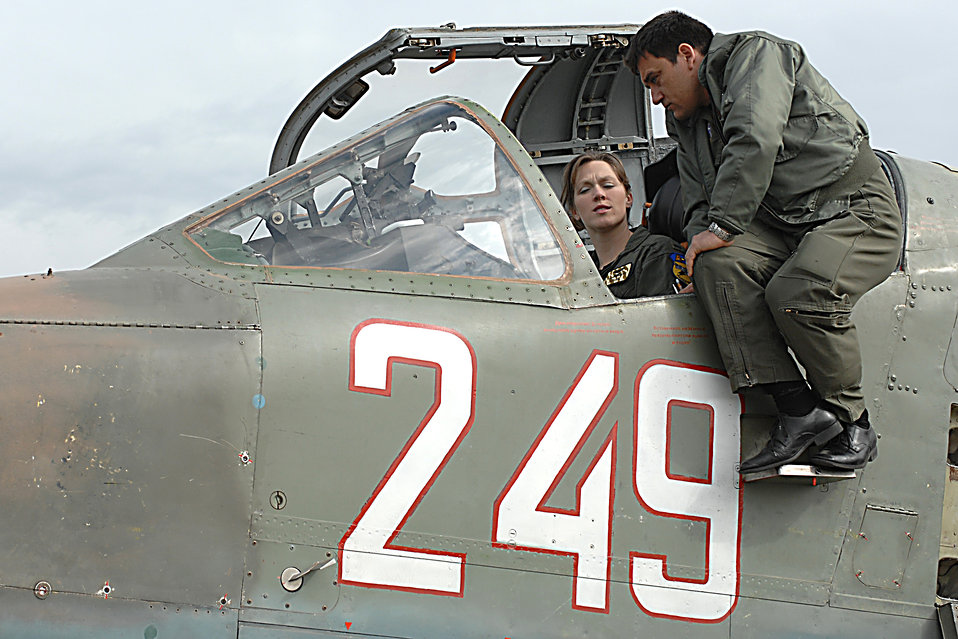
A-10 pilots take to Bulgarian skies during joint exercise

Capt. Vladislav Todorov, a Bulgarian SU-25 pilot, explains the SU-25 cockpit April 15 to Air Force 1st Lt. Priscilla Giddings, an A-10 pilot from the 81st Fighter Squadron. Pilots from Spandahlem Air Base, Germany, and the Bulgarian air force joined together during